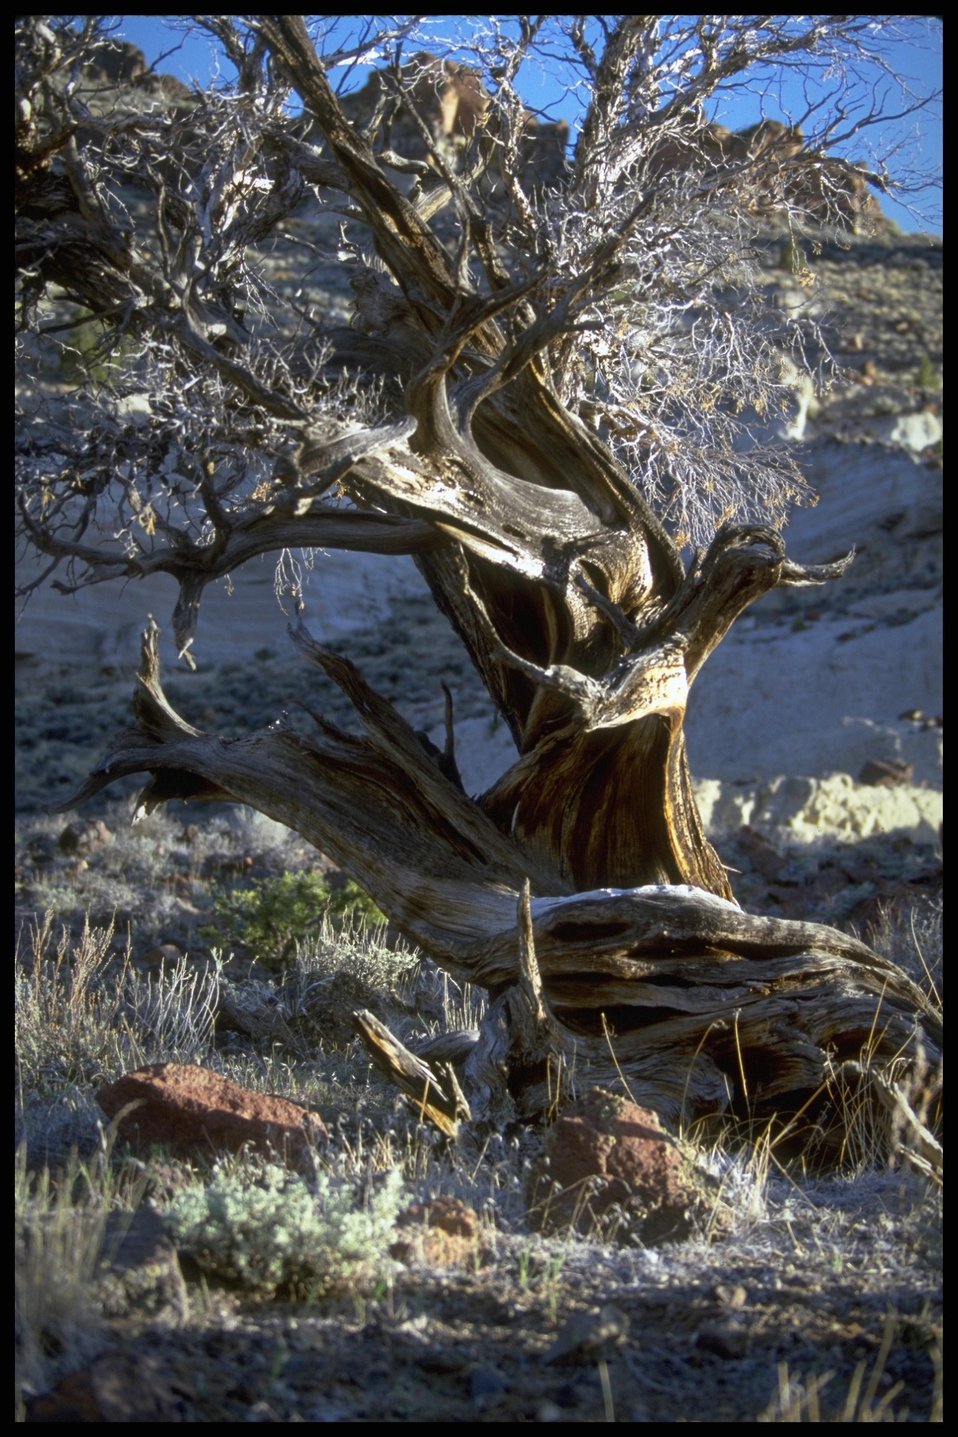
Juniper, Lakeview District.